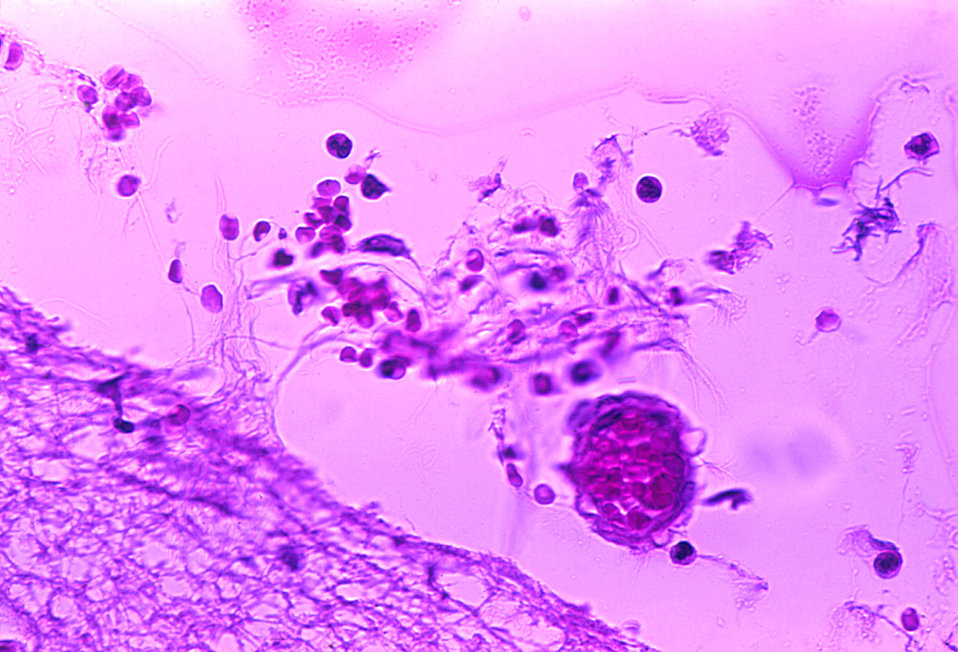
Mild meningitis with hemorrhage due to Bacillus anthracis.